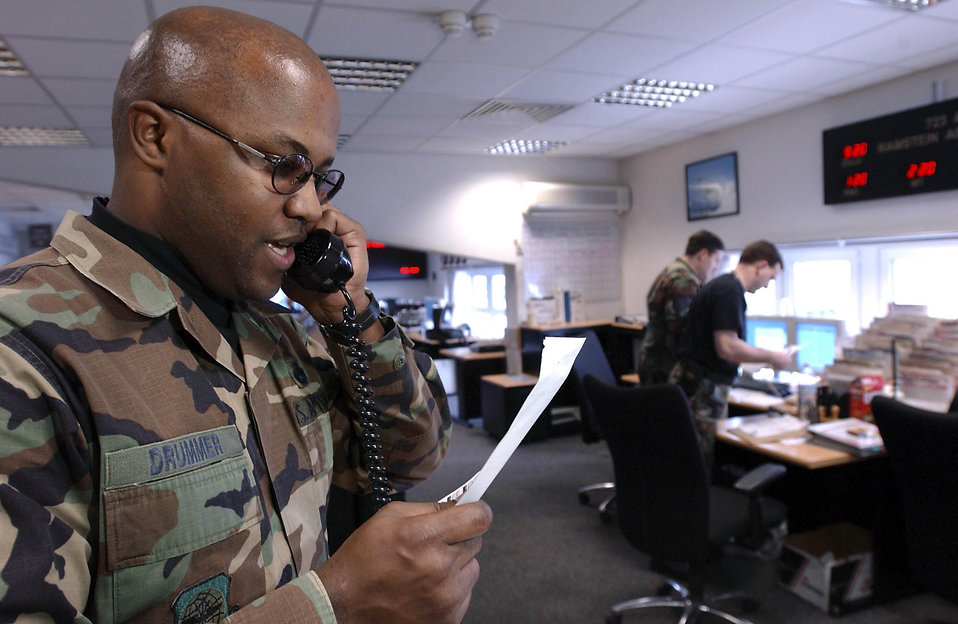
Air transportation operations

RAMSTEIN AIR BASE, Germany -- Tech. Sgt. Donald Drummer coordinates loading cargo onto a C-17 Globemaster III at Ramstein Air Base, Germany. Drummer is an air transportation operations center senior controller. The center belongs to the 723rd Air Mobility Squadron and is the hub of operations for loading and unloading aircraft, and directing airlifters to and from their destinations.